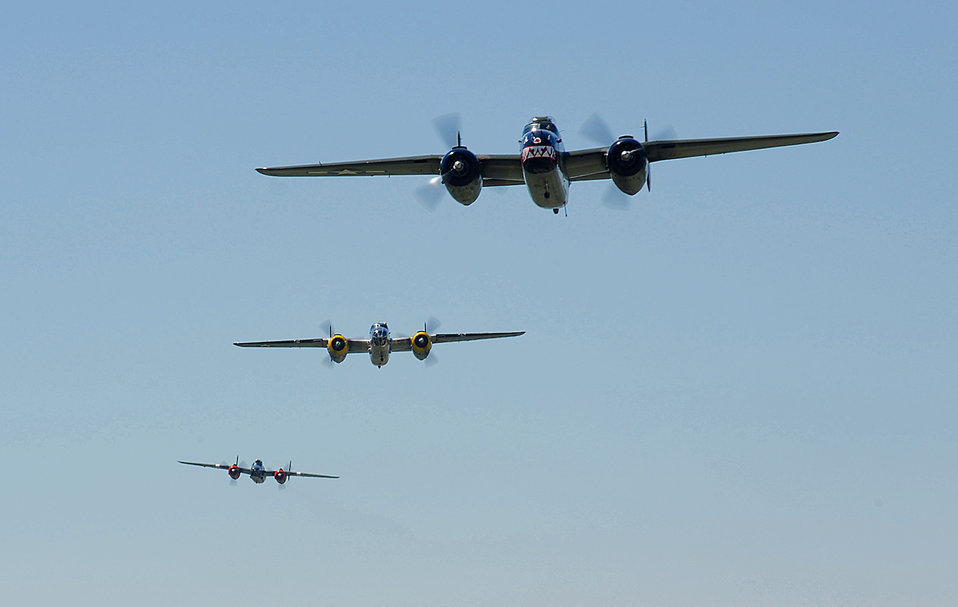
68th Doolittle Raiders Reunion

Vintage B-25 Mitchell bombers fly over the National Museum of the U.S. Air Force at Wright-Patterson Air Force Base, Ohio, during a memorial flight honoring the Doolittle Tokyo Raiders on April 18, 2010. The 68th Doolittle Raiders' reunion commemorates the anniversary of the Doolittle Tokyo Raid. On April 18, 1942, U.S. Army Air Forces Lt. Col. Jimmy Doolittle's squad of 16 B-25 Mitchell aircraft bombed targets in Japan responding to the attack on Pearl Harbor.